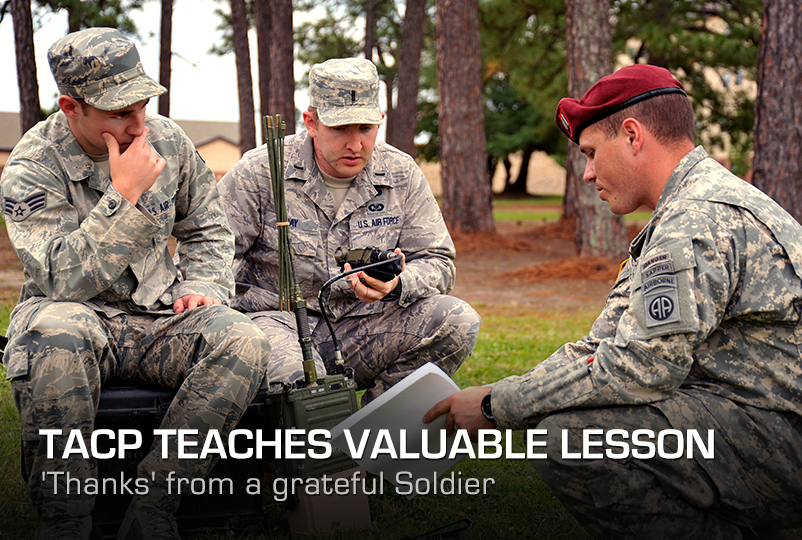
TACP teaches valuable lesson